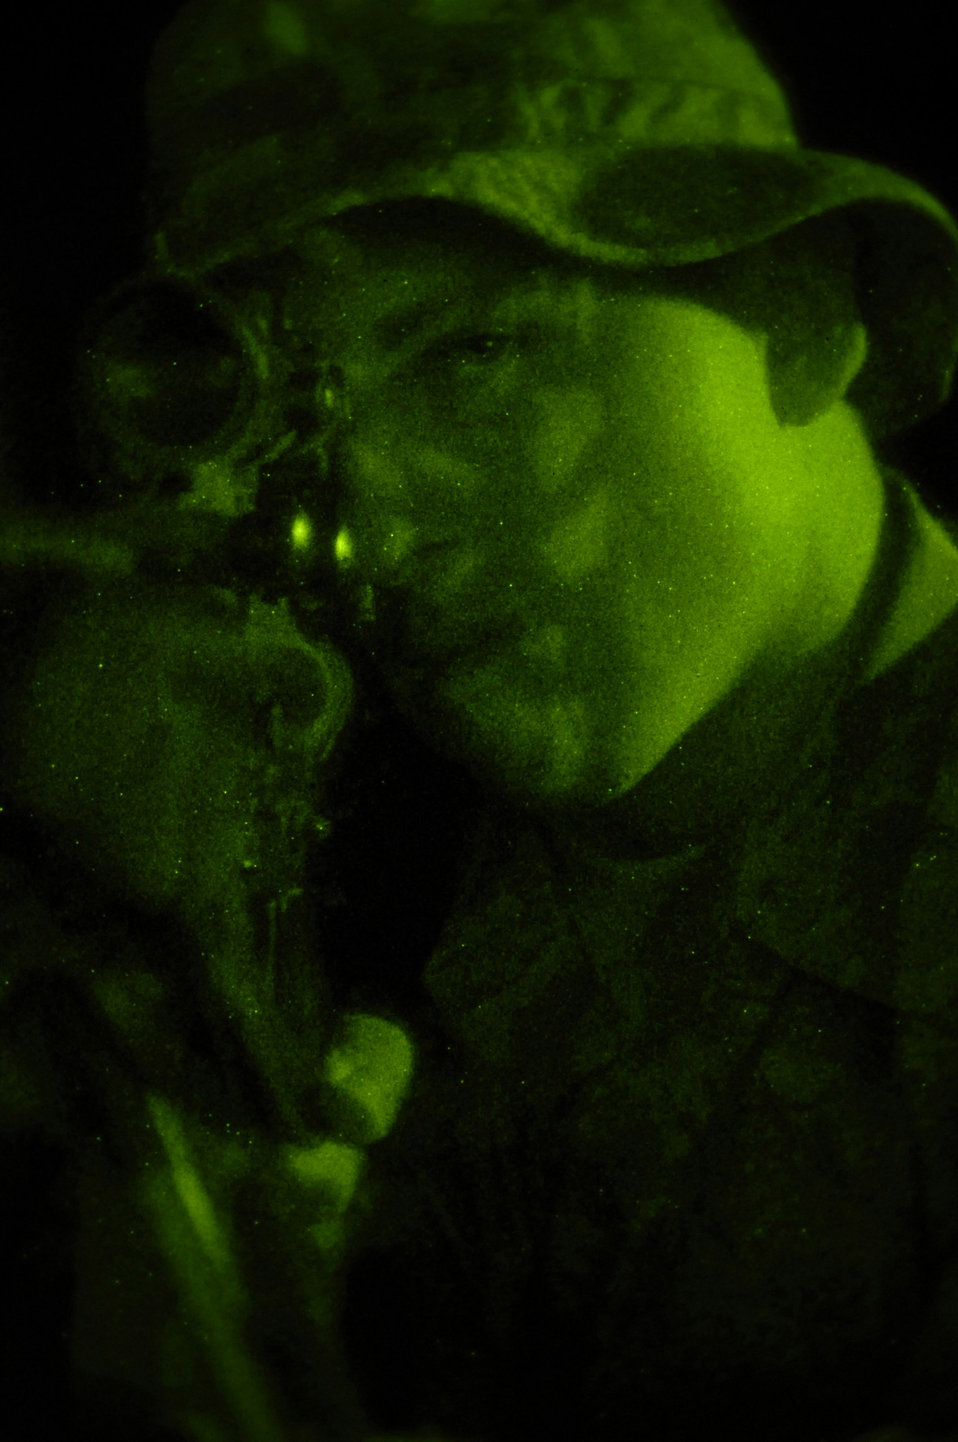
Sniper training

Airman 1st Class Matt Leeper sets his sites while on top of a lookout point where his sniper team has set up surveillance for terrorist activity Nov. 14 in Iraq. The 506th Expeditionary Security Forces Squadron at Kirkuk Air Base, Iraq, houses a close precision engagement team of Air Force snipers who train as anti-sniper teams to target terrorist and insurgent snipers attacking U.S. and coalition forces in the area. Airman Leeper is from the 354th Security Forces Squadron at Eielson Air Force Base, Alaska, deployed to Kirkuk Air Base, Iraq, as a member of the 506th Expeditionary Security Forces Squadron.